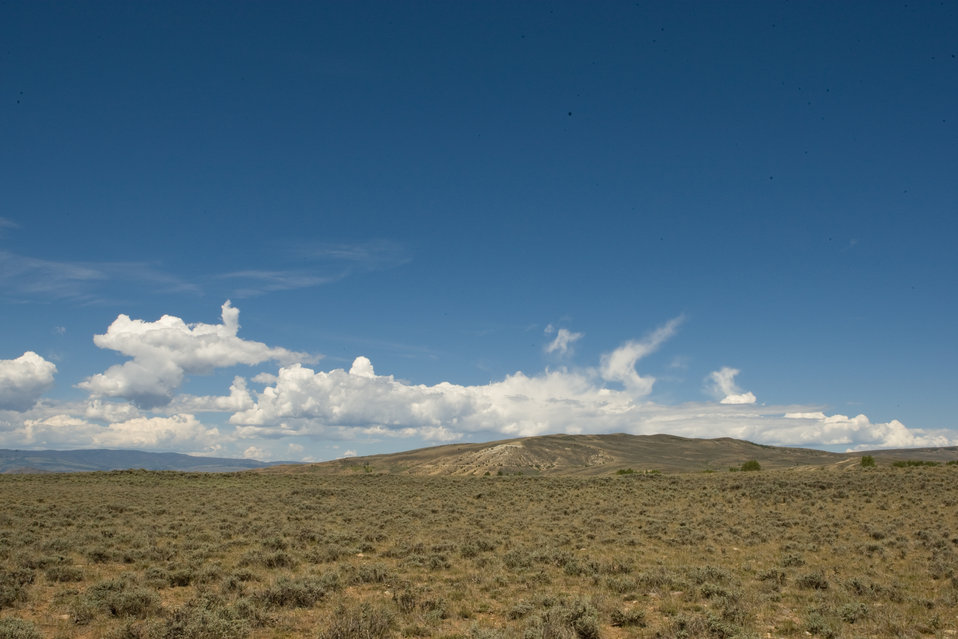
Colorado Rare Plant Conservation Initiative

The Colorado Rare Plant Conservation Initiative (RPCI) is a partnership of 23 statewide and regional agencies, private organizations, and academic institutions working to conserve 121 rare plants in Colorado. As part of these efforts the group developed the Colorado Rare Plant Conservation Strategy, developed Best Management Practices to reduce energy development impacts, addressed climate change, and developed focused strategies for the conservation of individual species at eight priority landscapes. The group has also worked to coordinate volunteer efforts for plant conservation across the state.